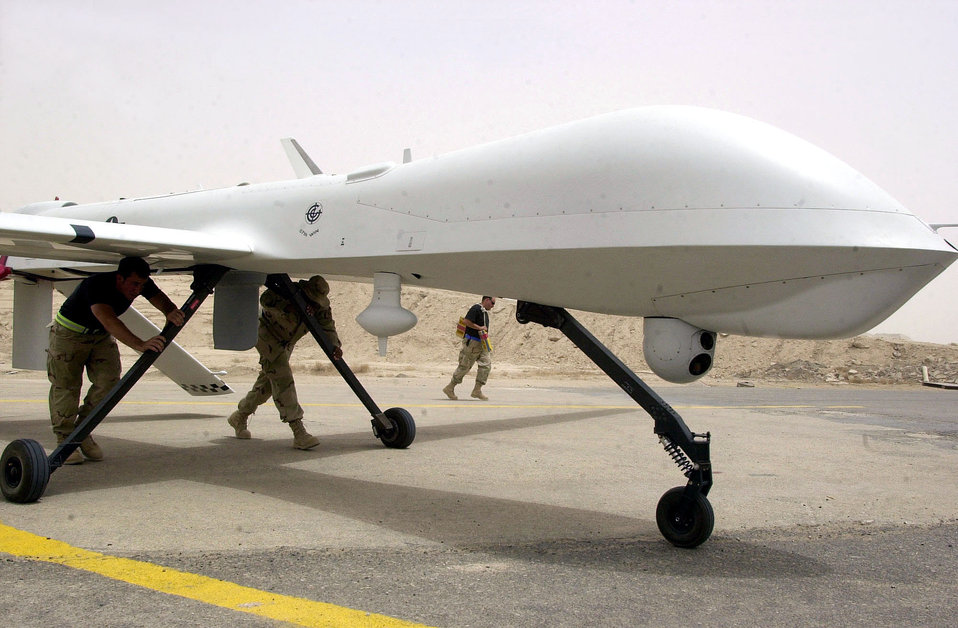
Here comes the Predator

TALLIL AIR BASE, Iraq -- Airmen from the 64th Expeditionary Reconnaissance Squadron position a Predator unmanned aerial vehicle. The Predator is a complete system, not just an individual airframe. A fully operational system consists of four Predator units, a ground-control station, a satellite link and about 55 people to support continuous 24-hour operations.